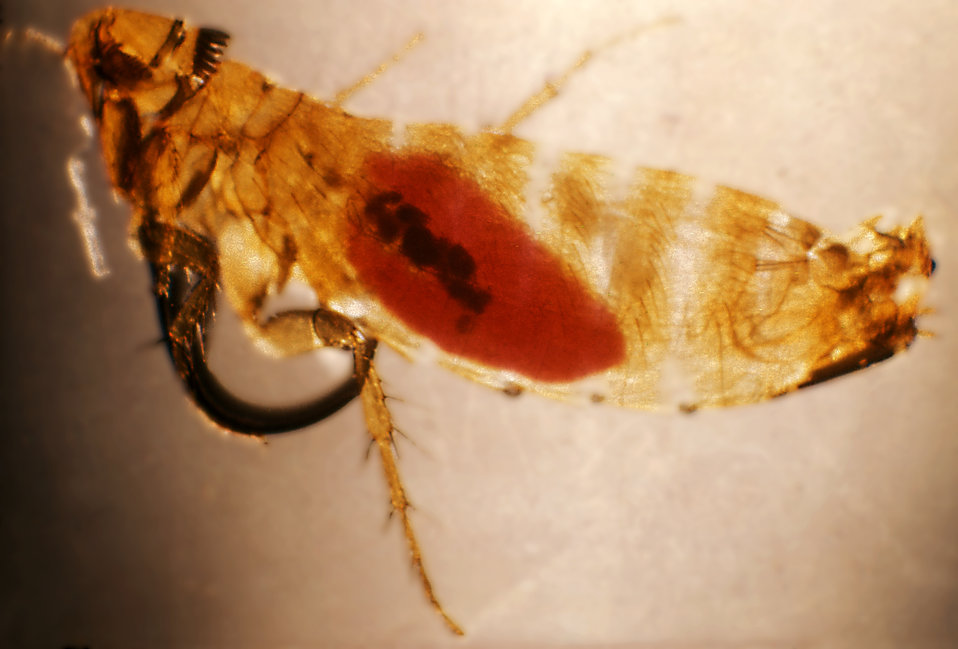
Plague-infected male Epitedia wenmanni 25 days after feeding on an inoculated mouse.